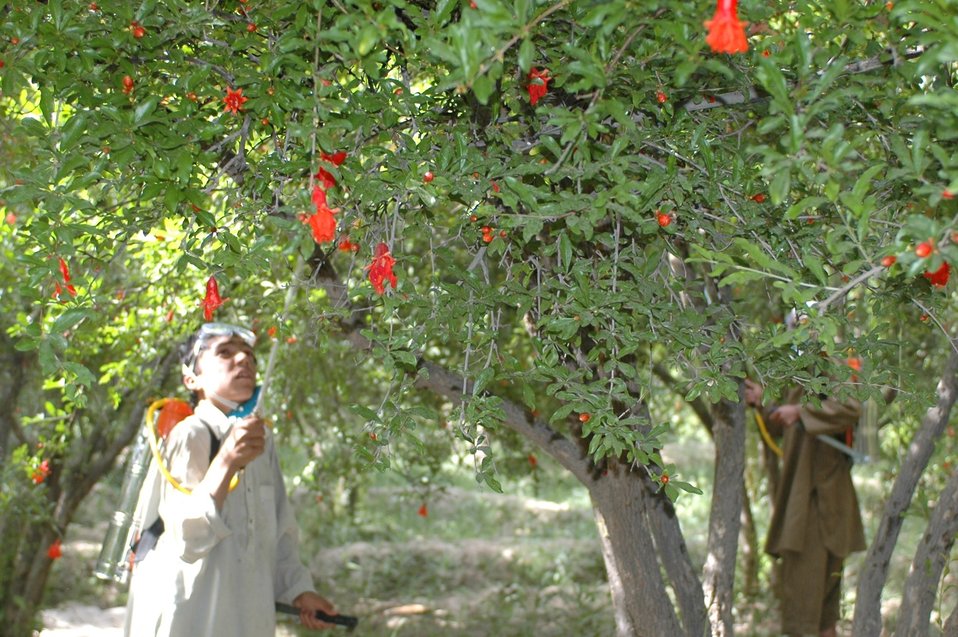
Dr Shah Visits Argandab April 10, 2010